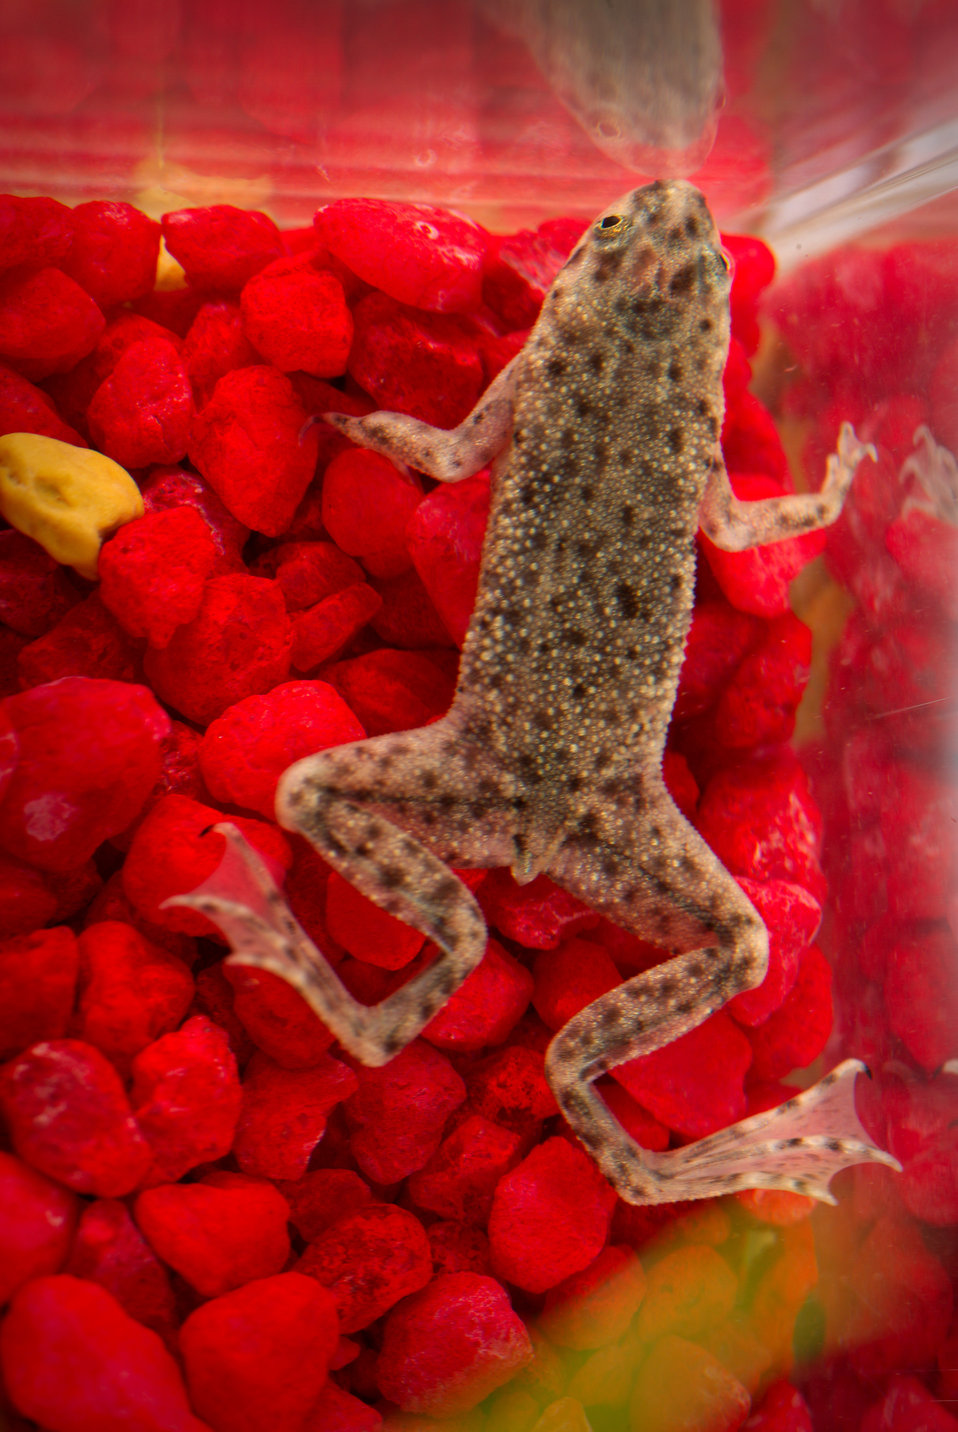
This photograph depicts an African dwarf frog, Hymenochirus boettgeri.